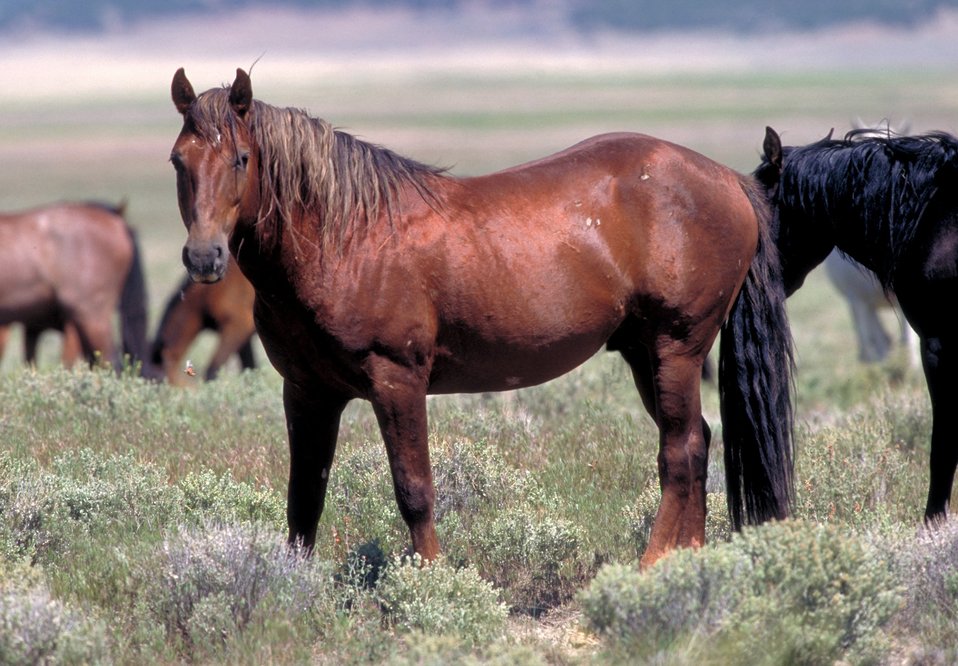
Onaqui Herd near Dugway, Utah.